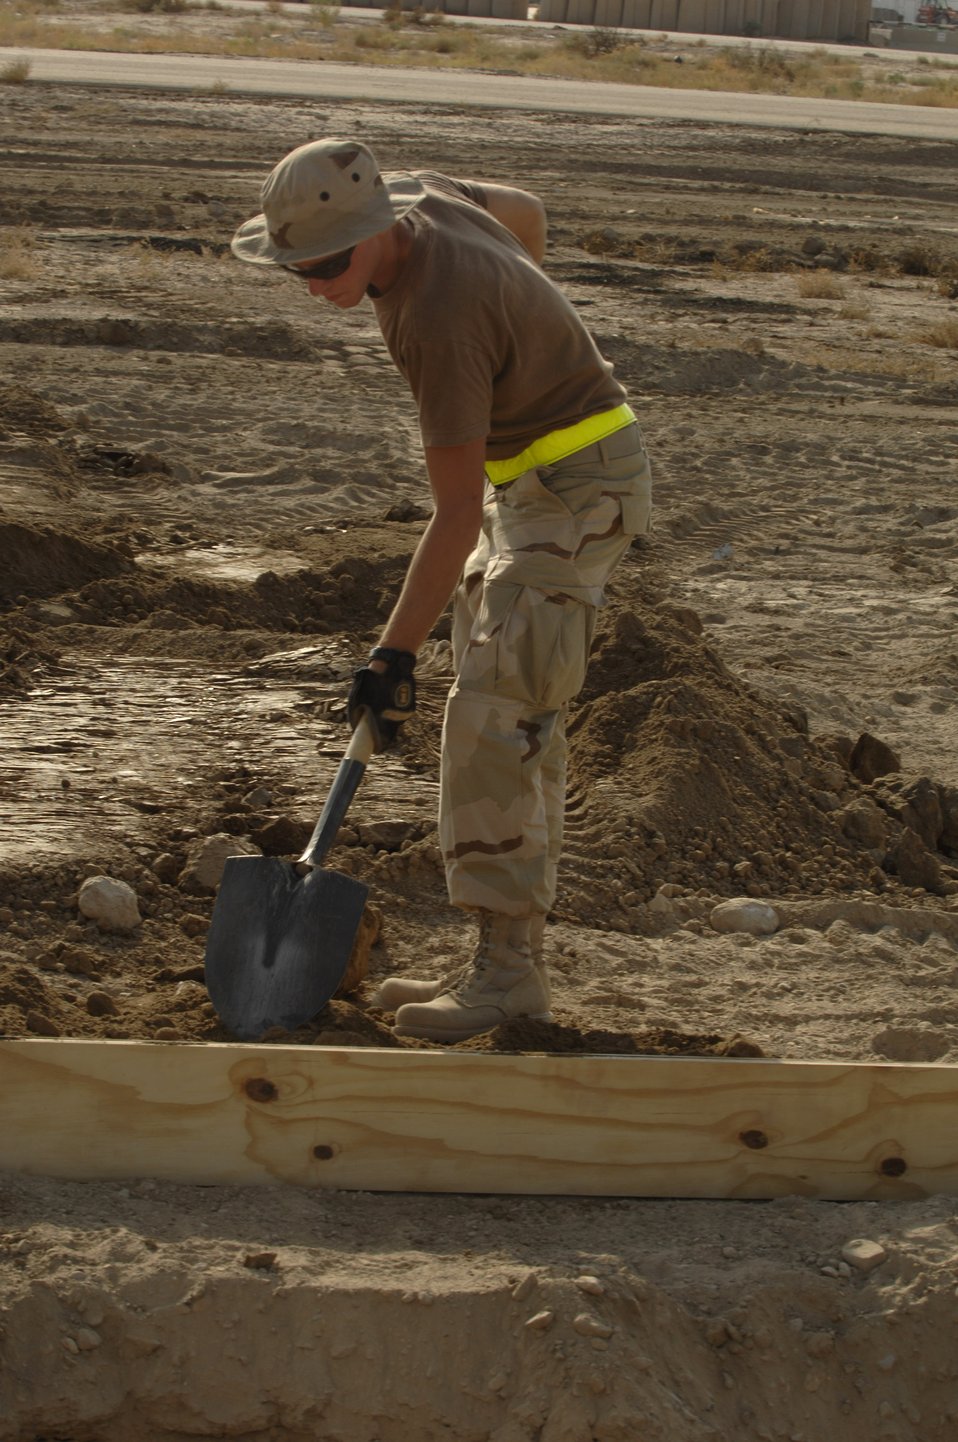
Down and Dirty

Airman 1st Class Dustin Haycox packs dirt around a wooden form Oct. 3 to hold it in place prior to pouring a concrete footer for sun shades being installed on the Ali Base, Iraq, flightline. Airman Haycox and other Airmen in the 407th Civil Engineer Squadron are working around the clock to build the sun shades by November.